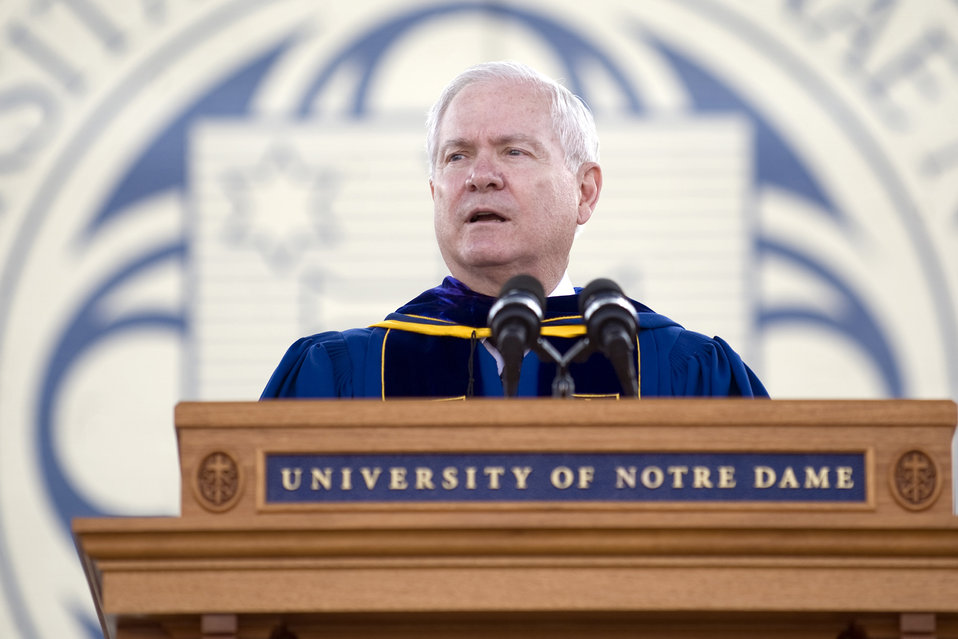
Secretary Gates at Notre Dame

Defense Secretary Robert M. Gates speaks during the University of Notre Dame commencement ceremony May 22, 2011, in South Bend, Ind. Secretary Gates told graduates that the size and strength of the U.S. military will be key to U.S. success in the 21st Century.